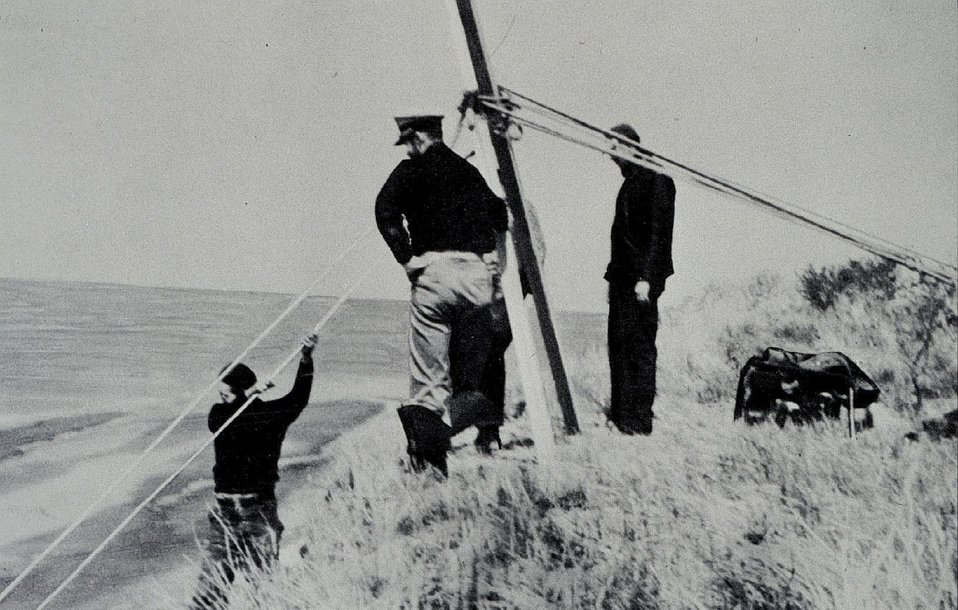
Hauling Shoran gear up the cliff at Nushagak Bay. Party off of PATHFINDER. Photo No. 3 of sequence